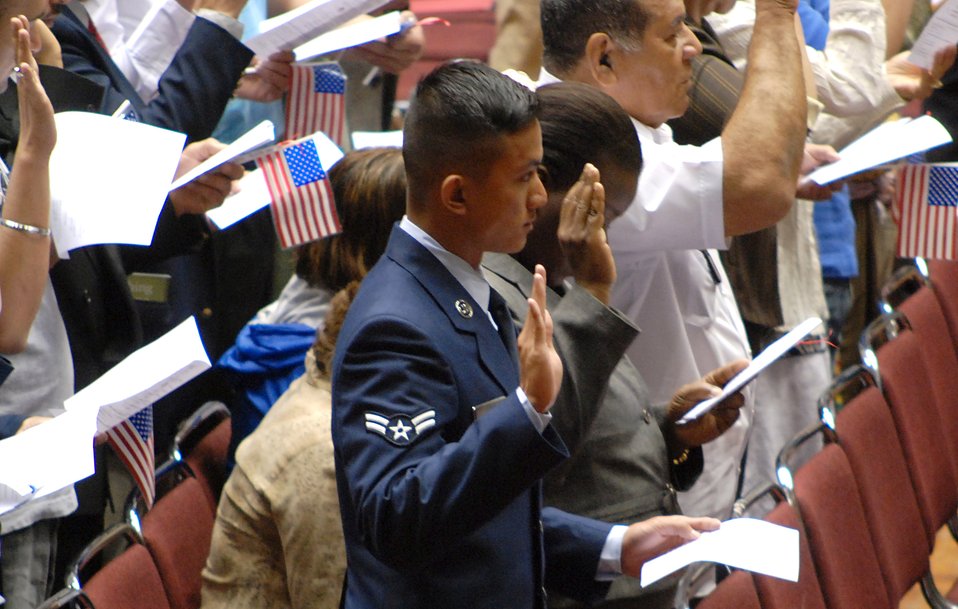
McConnell member makes journey; becomes true 'American Airman'

Airman 1st Class Thanh Tran raises his right hand to announce his allegiance to the United States in an oath of citizenship during a naturalization ceremony June 9 at the Municipal Auditorium at Kansas City, Mo.Tran is assigned to the 22nd Air Refueling Wing at McConnell Air Force Base, Kan.